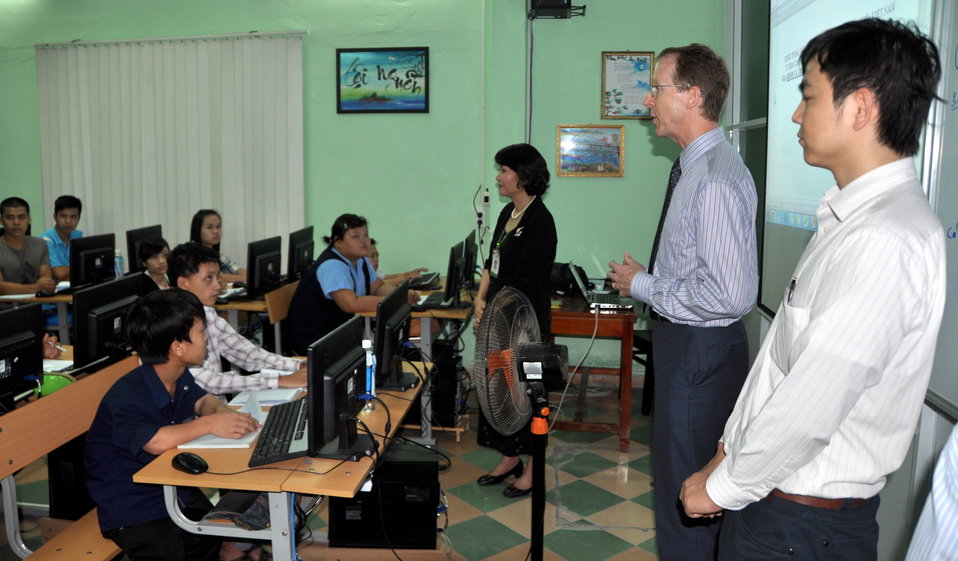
USAID Visits IT Training Program for People with Disabilities at Dong A University

Danang, Vietnam
July 17, 2013